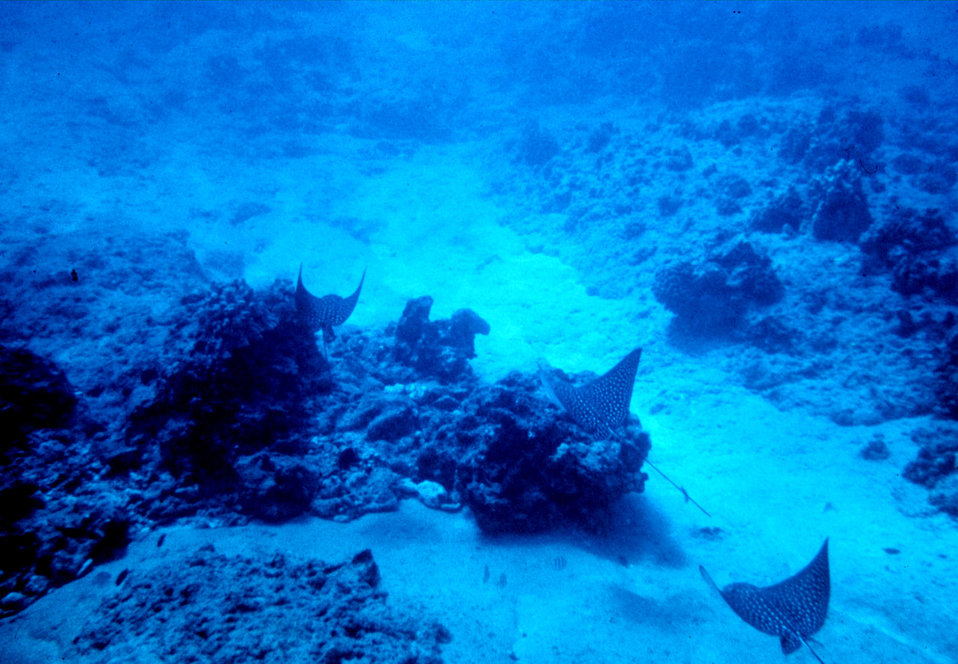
Eagle rays - Aetobatus narinari - flying in formation across a reef landscape.